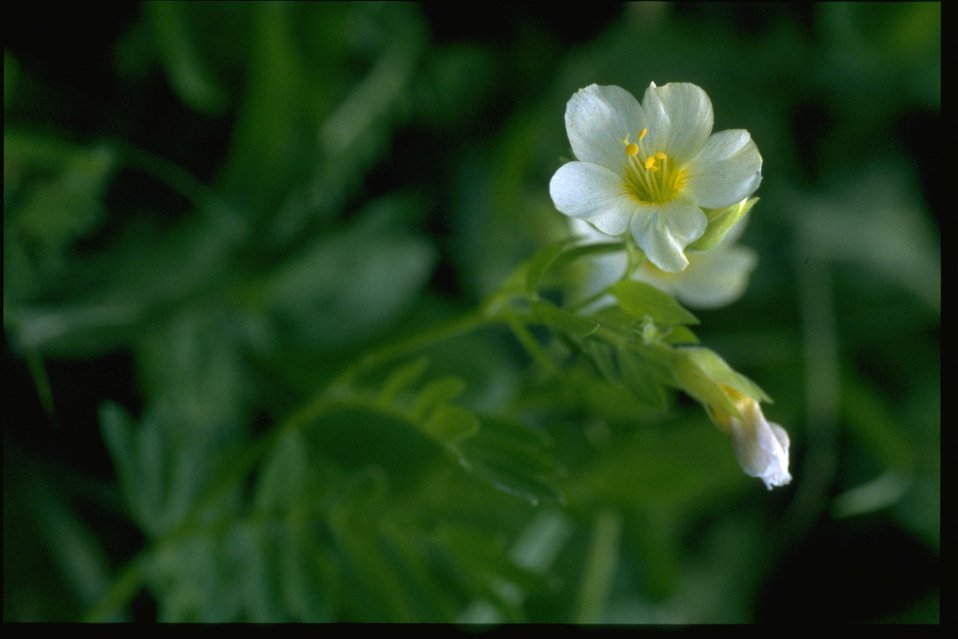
Medium shot of Polimonium pulcherrimum.